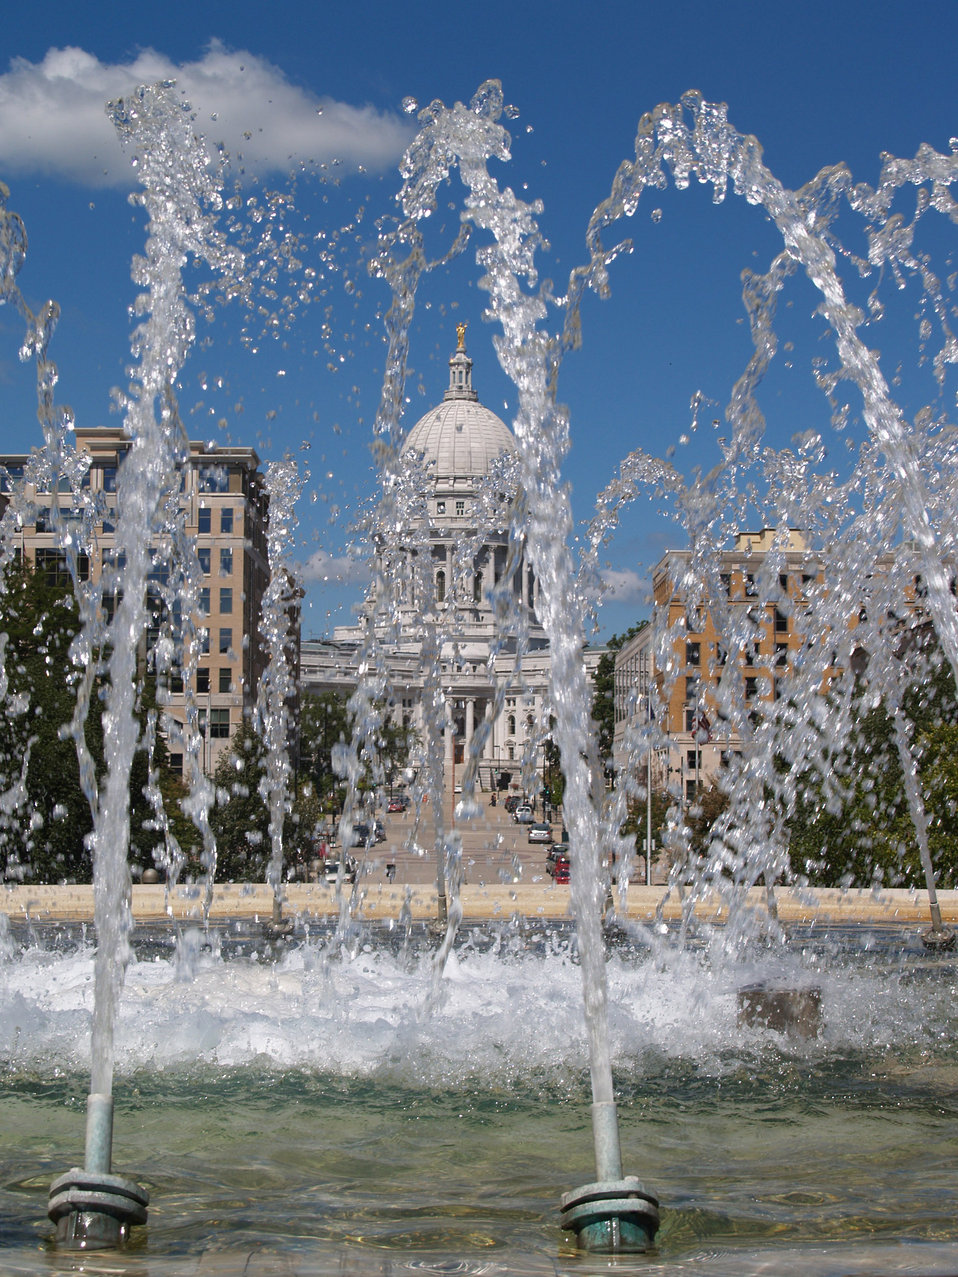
Wisconsin capital building through the fountain.